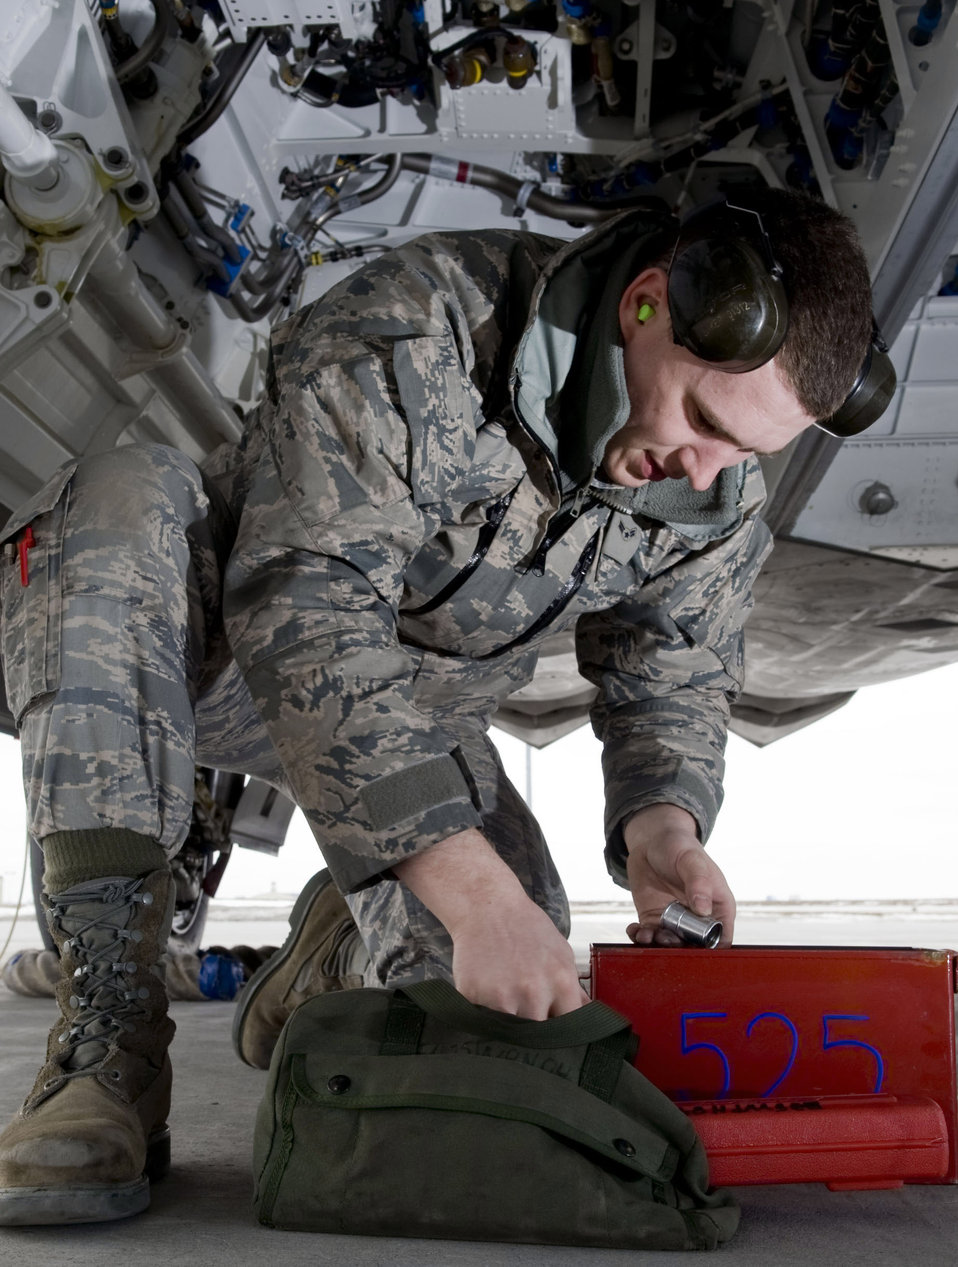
Bombs on target

Airman 1st Class Justin Baker grabs tools to setup an F-22 Raptor weapons bay for the loading of a Joint Direct Attack Munition April 14 at Elmendorf Air Force Base, Alaska. Airman Baker, from the 525th Aircraft Maintenance Unit, ensures the JDAM dropped by 525th Fighter Squadron is successful.